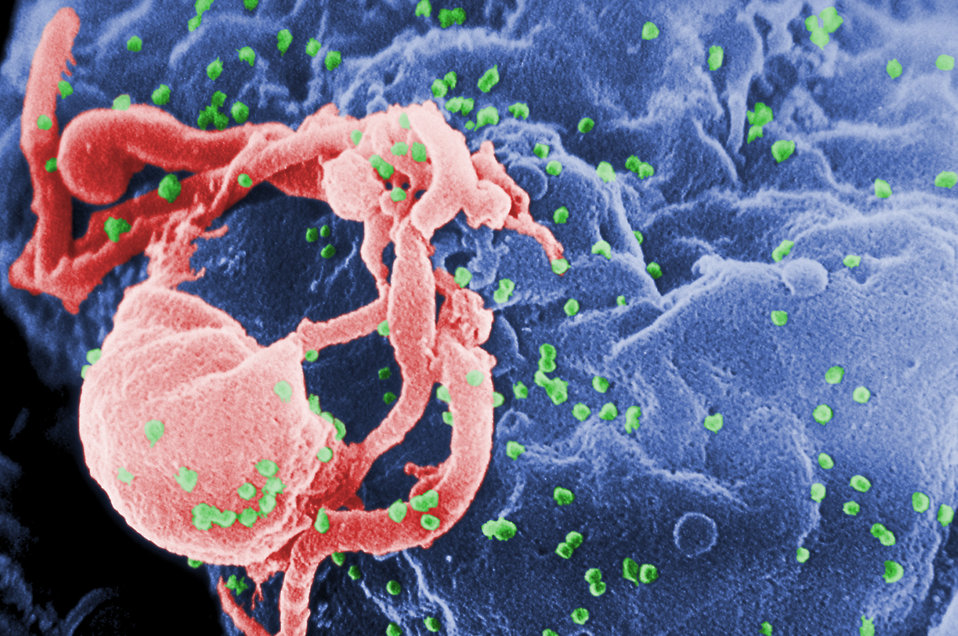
Scanning electron micrograph of HIV-1 virions budding from a cultured lymphocyte. See PHIL 1197 for a black and white view of this image. Also, please see PHIL 14270, for a low-magnified view of these budding virions.